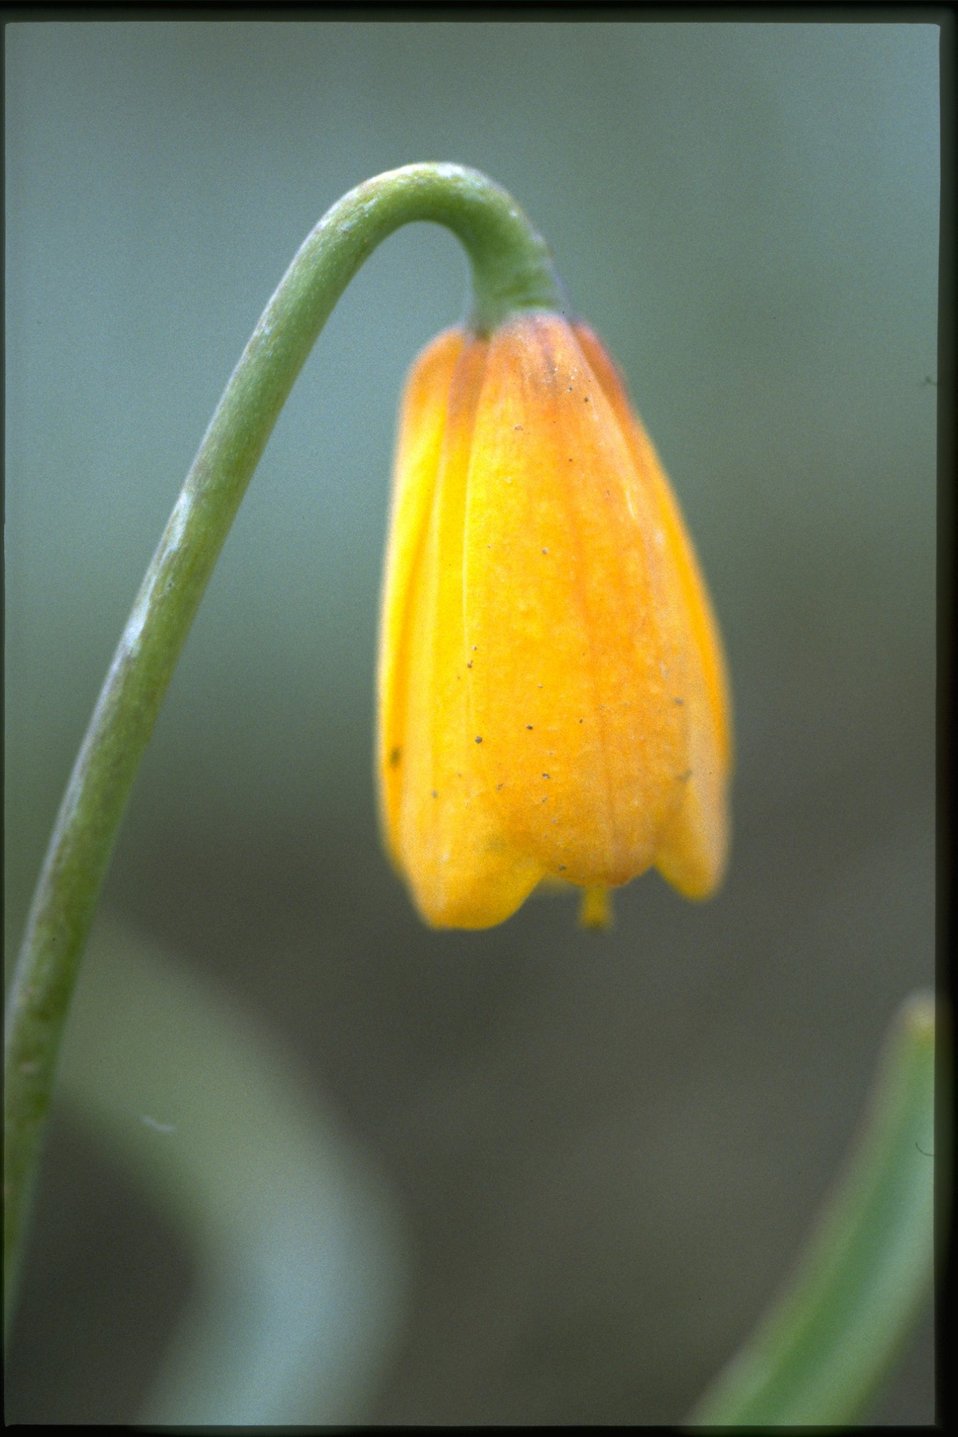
Closeup shot of Yellow Fritillary, Fritillaria Pudica, wildflower.